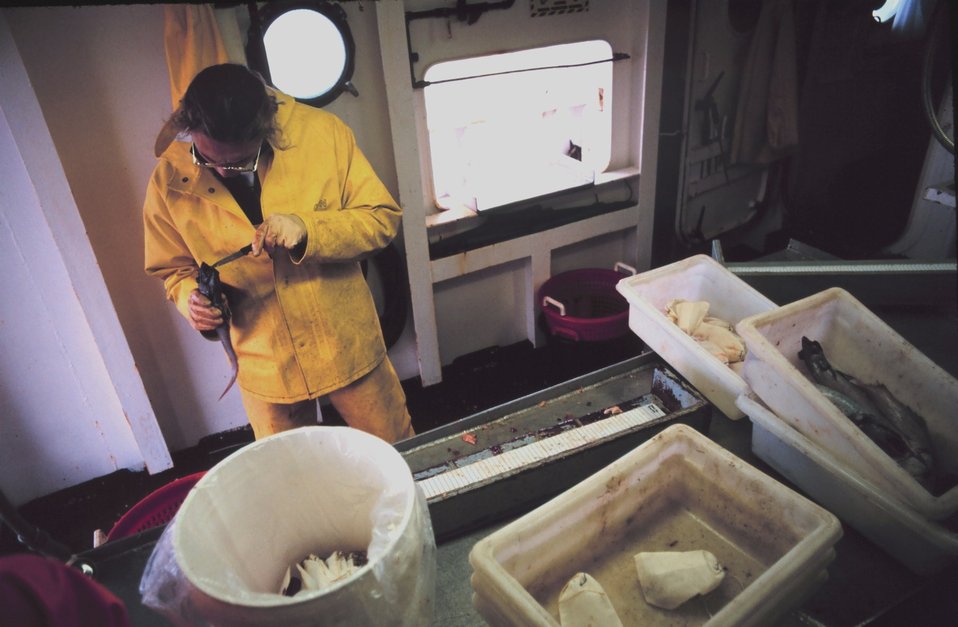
Scientist weighing, measuring, and sampling tissue on the MILLER FREEMAN